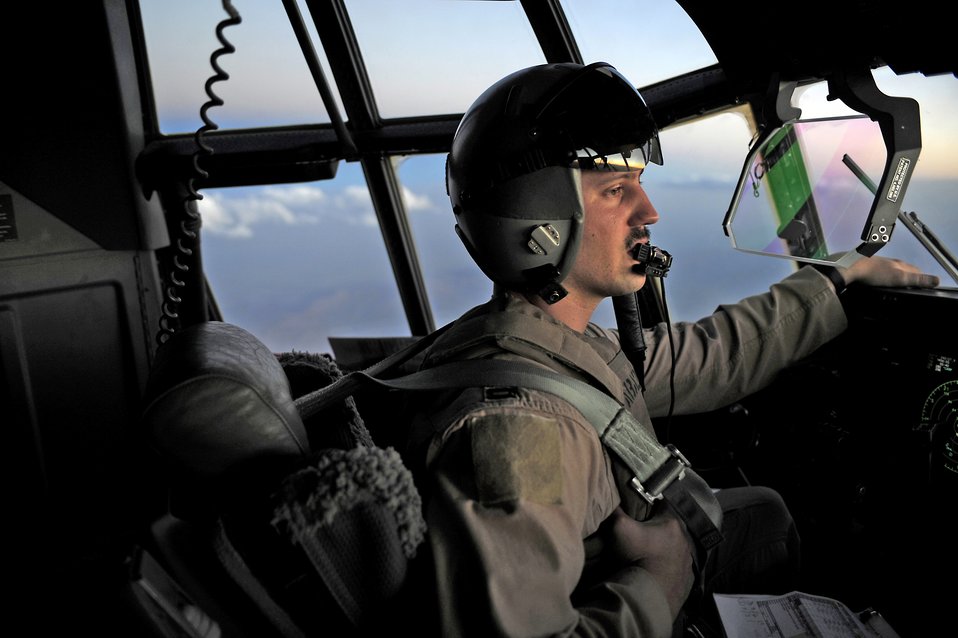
Airdrop fuels austere Afghan locations

Capt. Dan Rees monitors flight controls during a night airdrop to deliver JP-8 fuel to troops July 17 over southwestern Afghanistan. Captain Rees is aC-130J Super Hercules pilot assigned to the 772nd Expeditionary Airlift Squadron at Kandahar Airfield, Afghanistan. Captain Rees is deployed from the 41st Airlift Squadron at Little Rock Air Force Base, Ark.